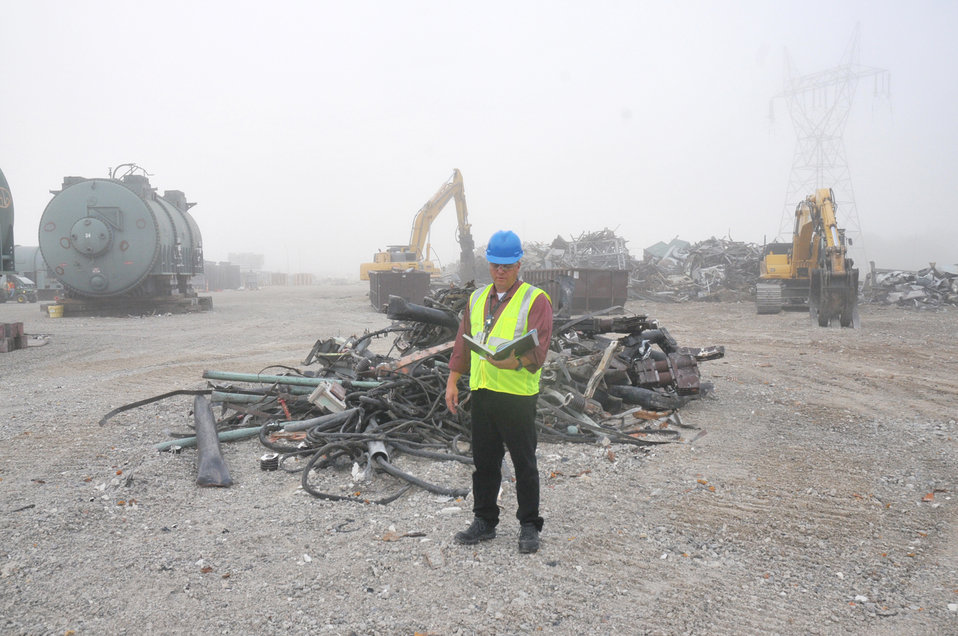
Recycling at Portsmouth

Surrounded by early morning fog, Pete Mingus of Fluor-B&W Portsmouth’s recycling and recovery program reviews inventory in front of a pile of metal that was part of the X-533 facility at the DOE Piketon site. Despite high heat and humidity this spring and summer, work has continued at a remarkable pace to recycle the recovered metal materials and return funds to the communities surrounding the plant through the Southern Ohio Diversification Initiative.